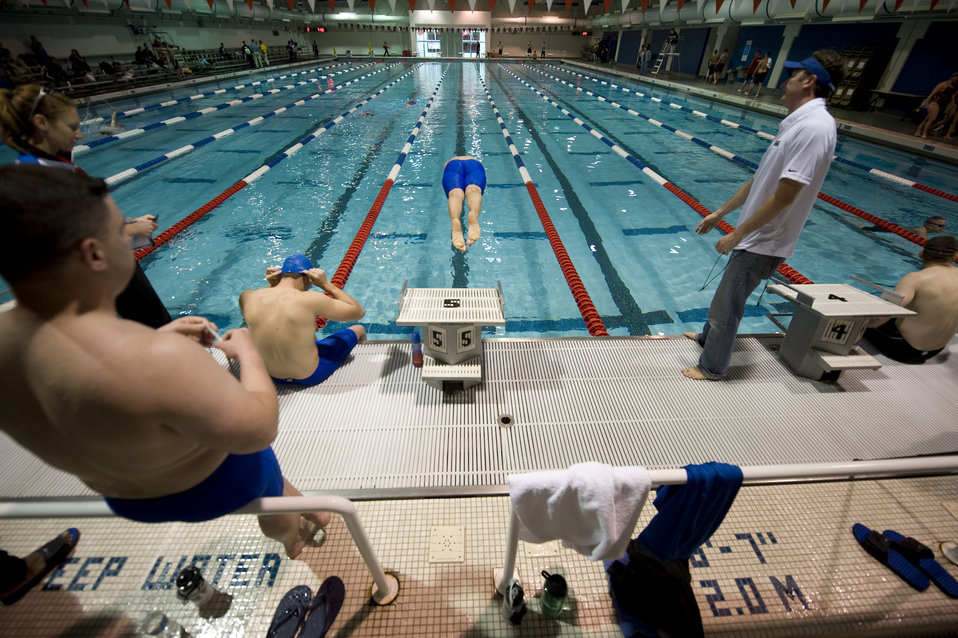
Warrior Games Airmen prepare for competition

The Air Force swim team members practice May 11, 2010, at the Olympic Training Center in Colorado Springs, Colo. These wounded, injured and ill athletes are competing against athletes from all services in the inaugural Warrior Games May 10 through May 14, 2010.